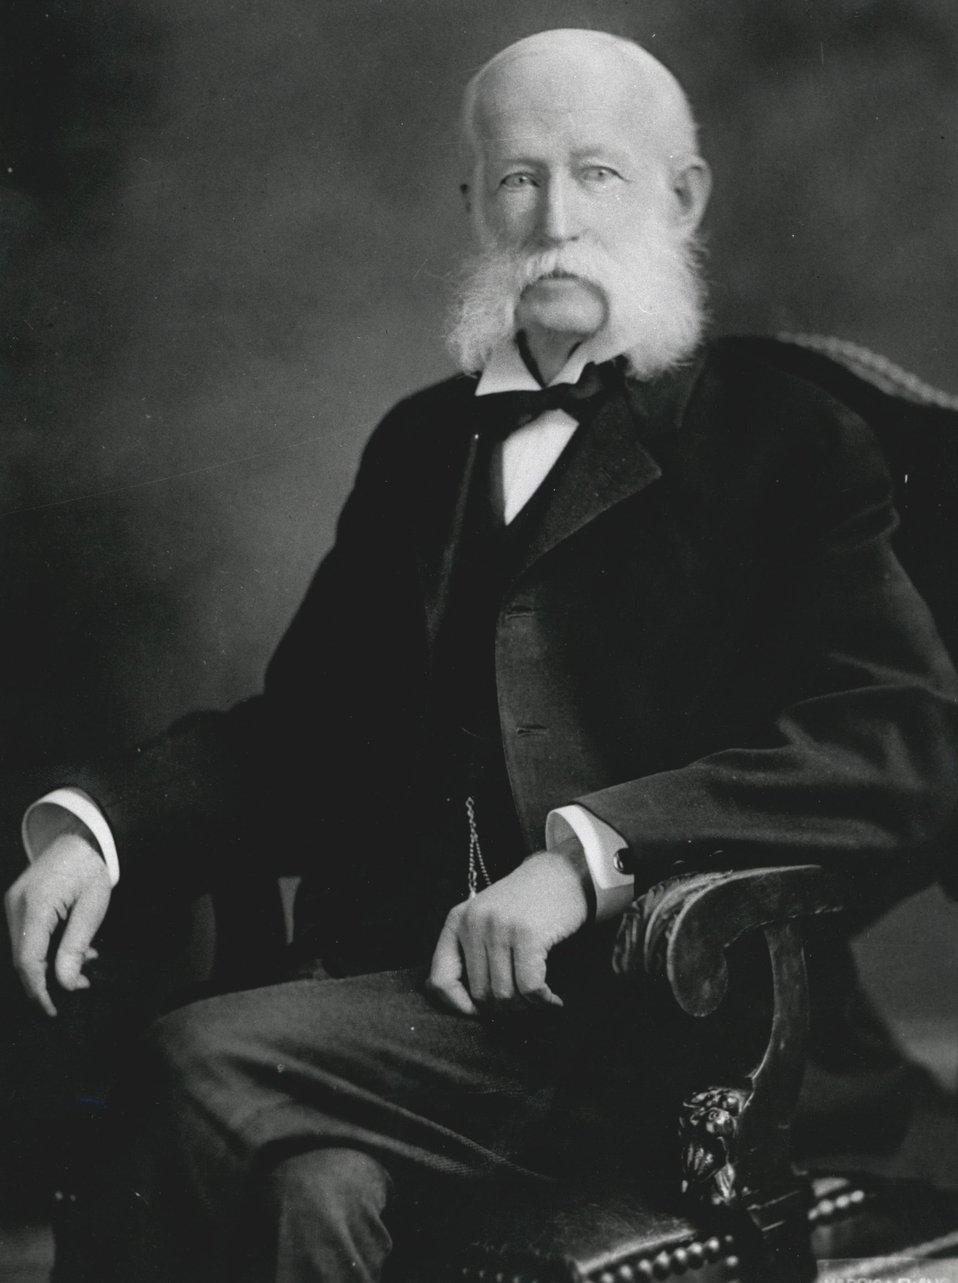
John W. Foster, U.S. Secretary of State, June 29, 1892 to February 23, 1893